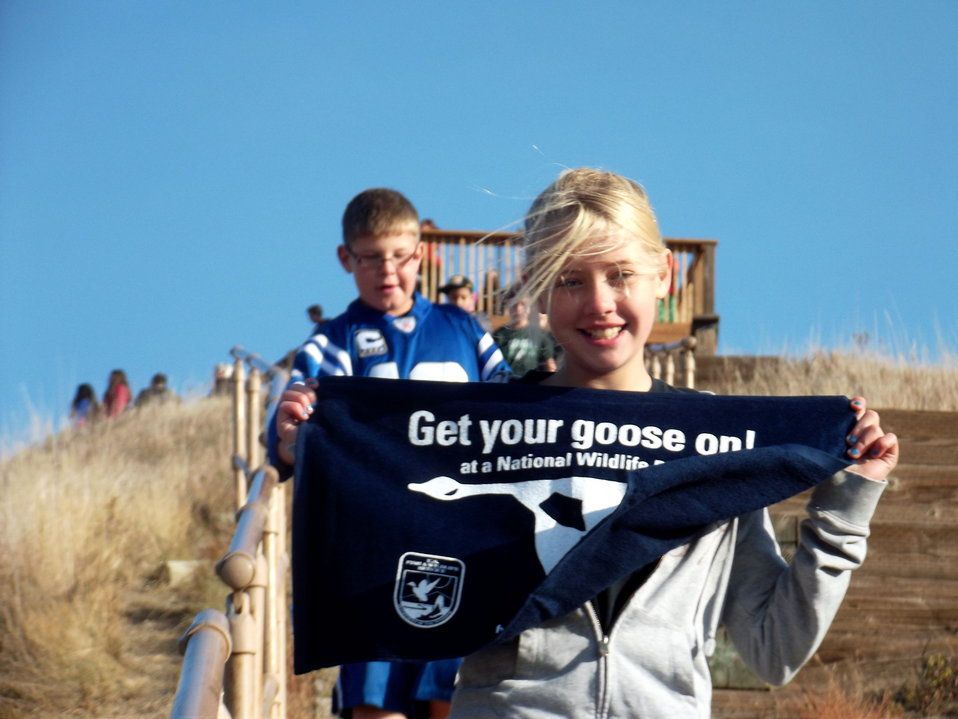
Get Your Goose On!

Photo taken at Sullys Hill National Game Preserve.